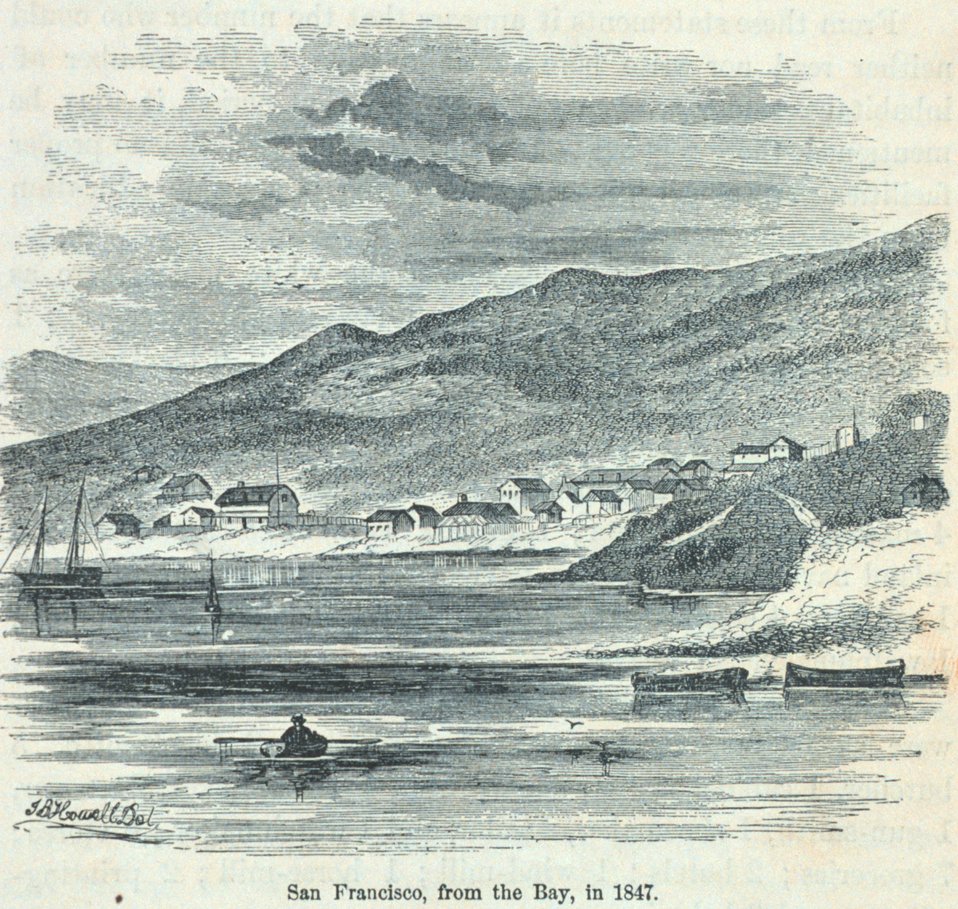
San Francisco from the bay - a small collection of buildings with little apparent promise for the future. In: 'The Annals of San Francisco'. Frank Soule, John Gihon, and James Nesbit. 1855. Page 177. D. Appleton & Company, New York. F869.S3.S7 1855.